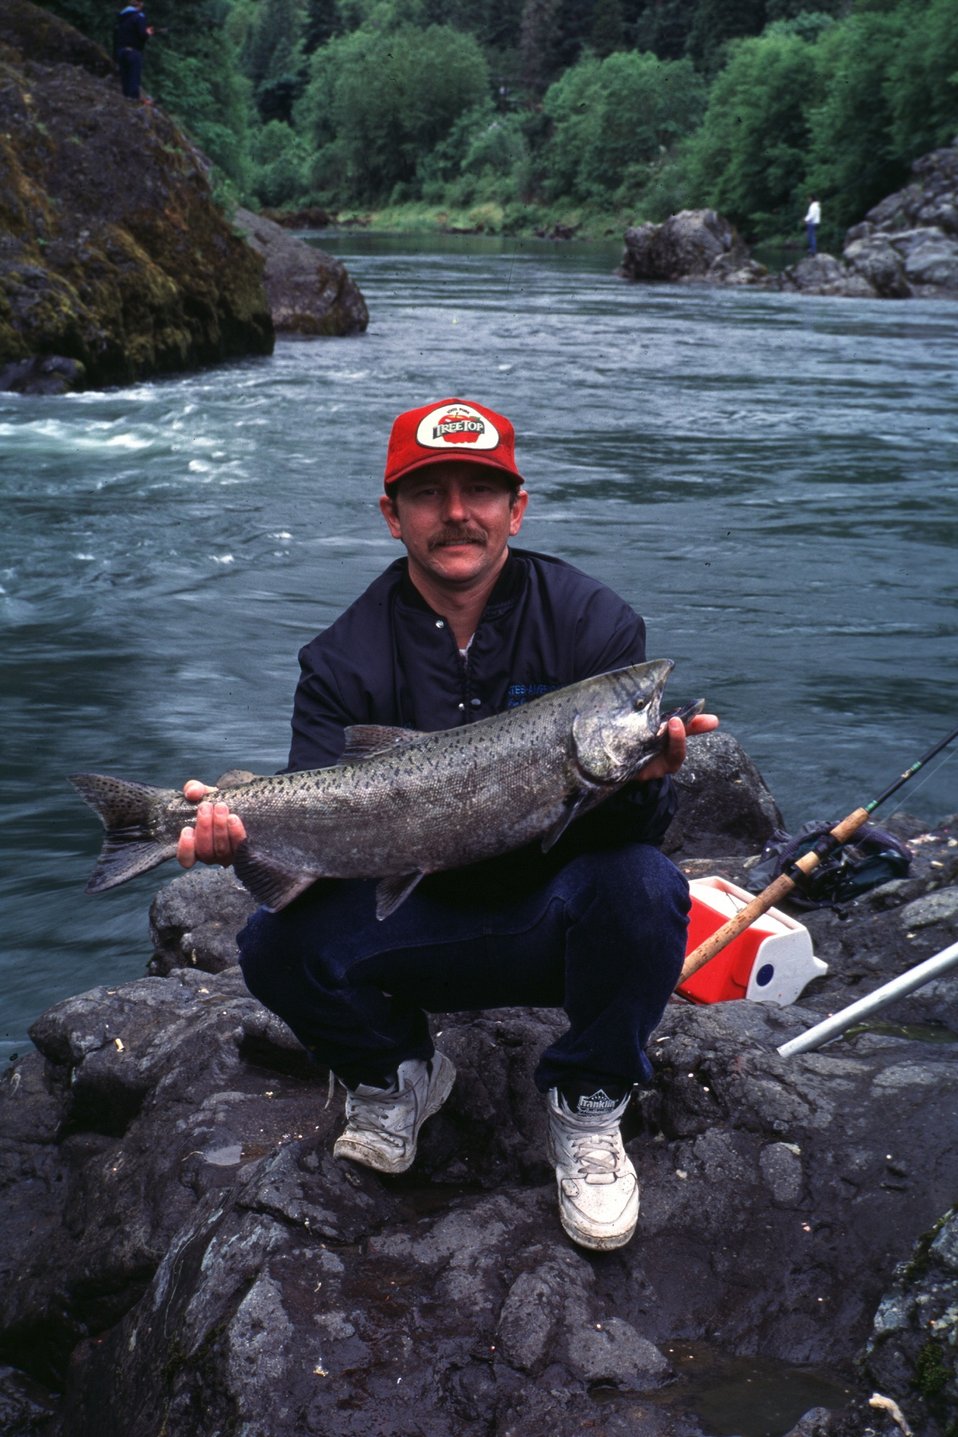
Fisherman holding Chinook Salmon at Swift Water.